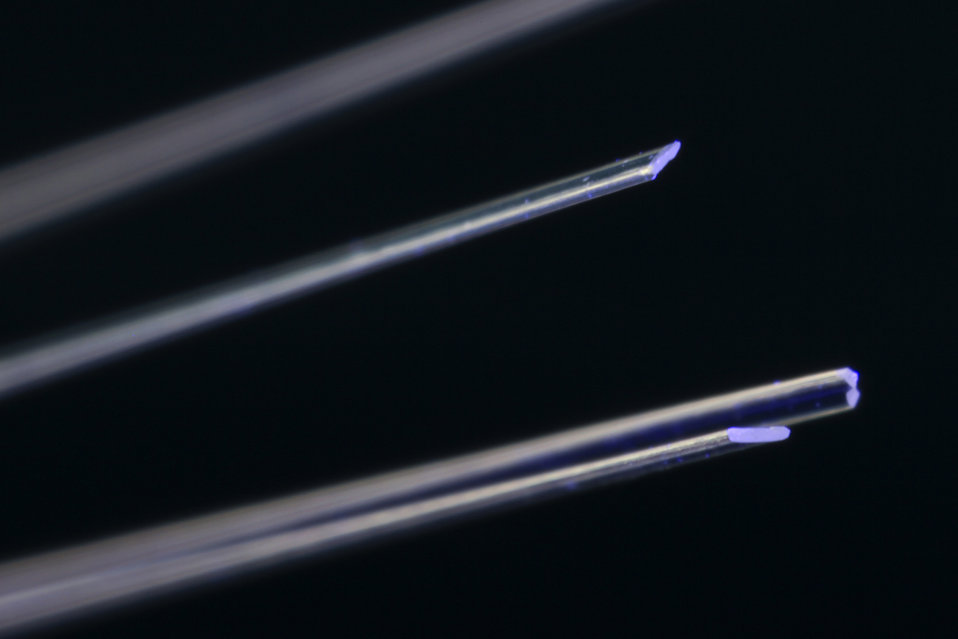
Superconducting wires by eptiaxial growth on SSIFFS at Oak Ridge National Laboratory.
Superconducting wires are flexible, single-crystal, high-temperature cables that enable high-performance advantages for electric power grid applications. These cables are different because they are round, rather than flat like conventional wires, which lowers heat loss and eliminates energy loss, making longer transmission lengths possible. Superconducting wires can carry five times more power than copper cables and are capable of long-distance power transmission, interconnecting entire continents and providing local energy storage. For a specify device or design, wires can be bundled into larger dimension wire of any shape.